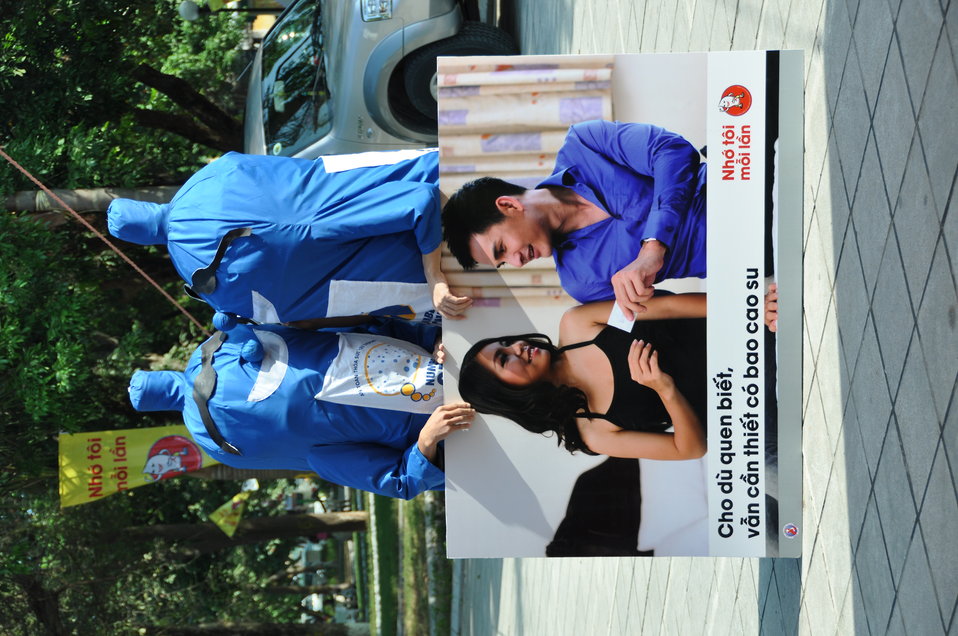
100% Condom Use Campaign Launch, Dec. 2, 2011